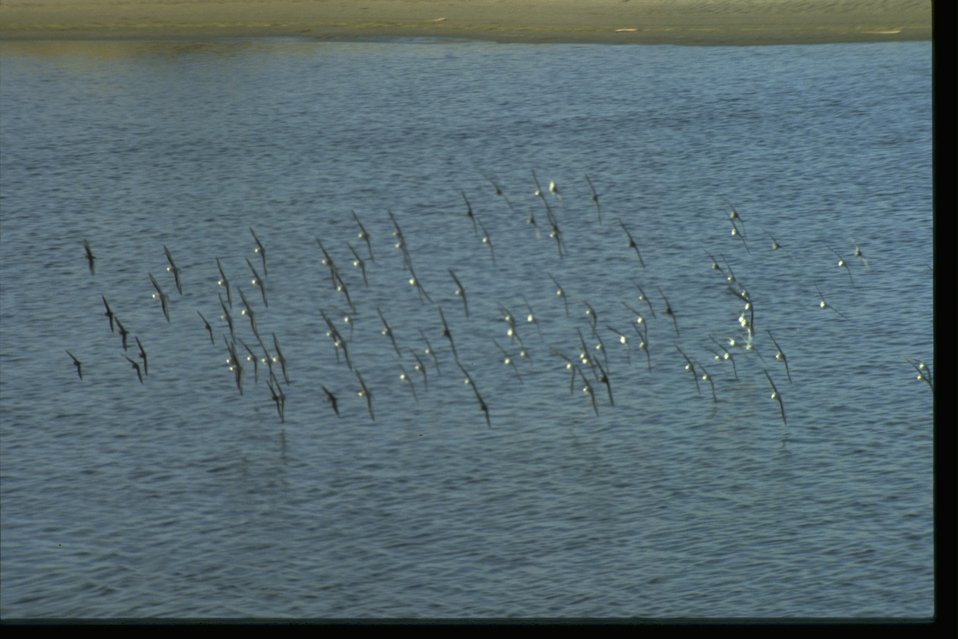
New River shore birds.